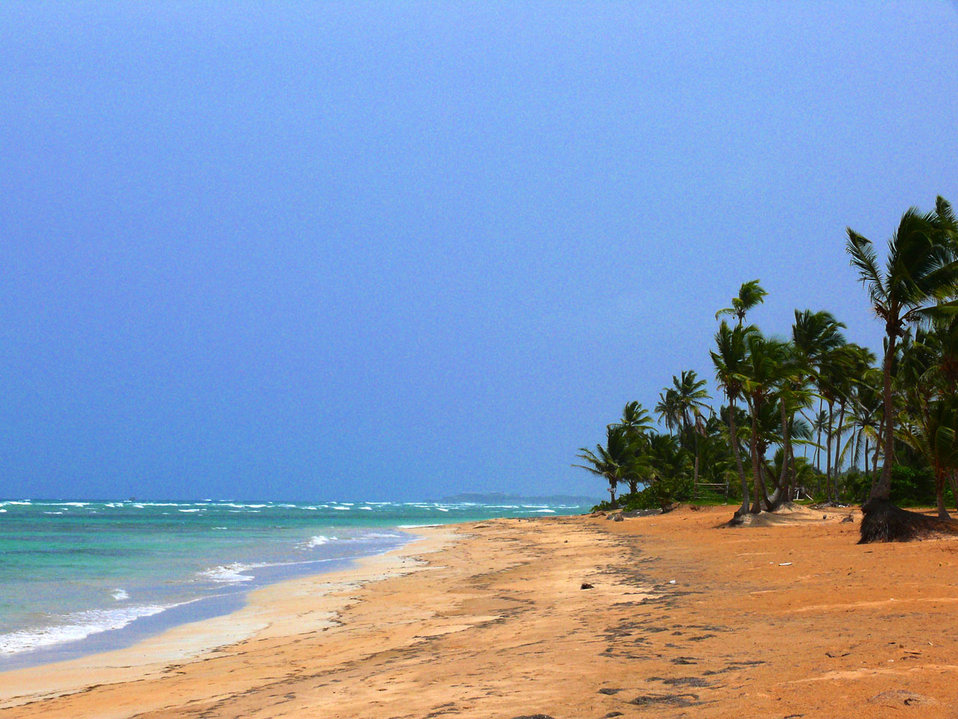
Beach uvero alto

Beach in uvero alto.